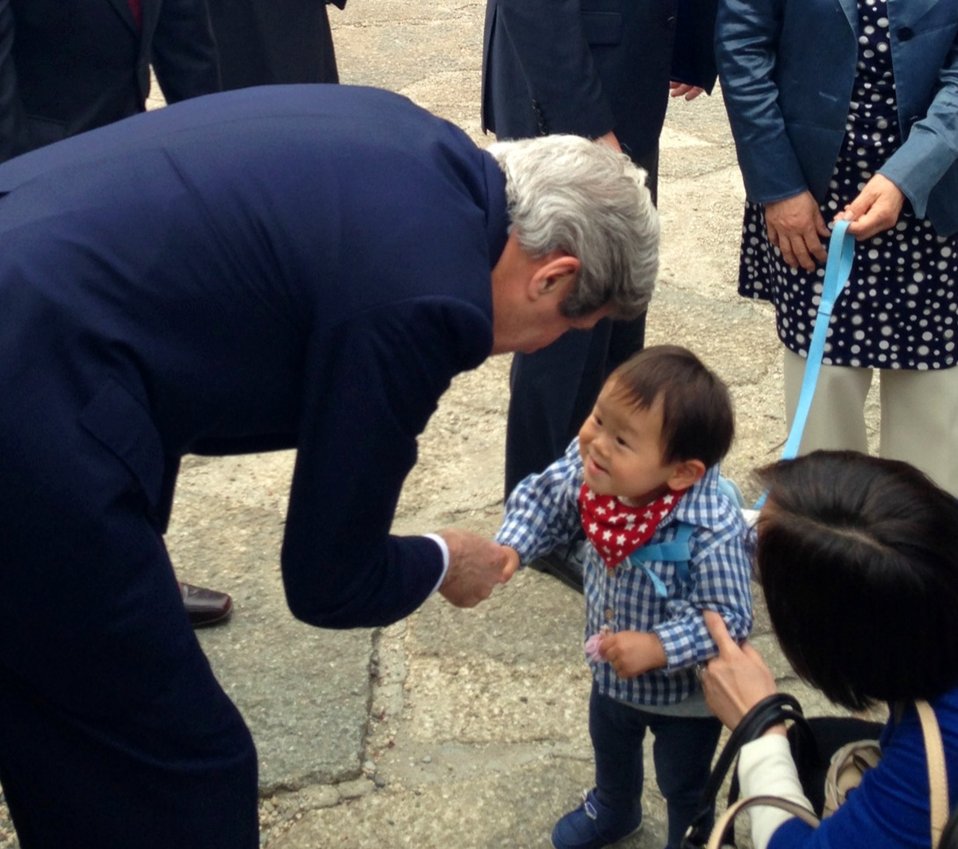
Secretary Kerry Meets a Child at Zojoji Shrine

U.S. Secretary of State John Kerry meets Ryousei, an 18-month-old, while touring the Zojoji Shrine, in Tokyo, Japan, on April 14, 2013.